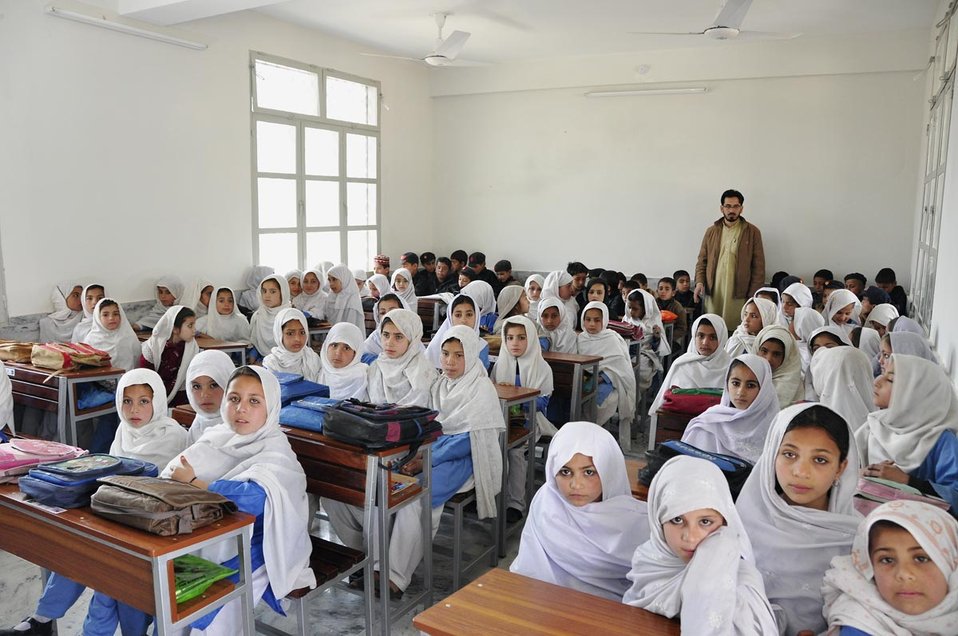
Buner School

Peshawar, March 14, 2012 - The Provincial Reconstruction, Rehabilitation and Settlement Authority (PaRRSA) handed over today to the KP Education Department the first of the 122 U.S. Government-sponsored schools at Torwarsak, Buner.